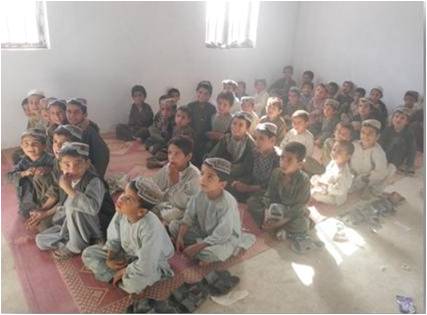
Marjah Schools Re-Open Following Election Day